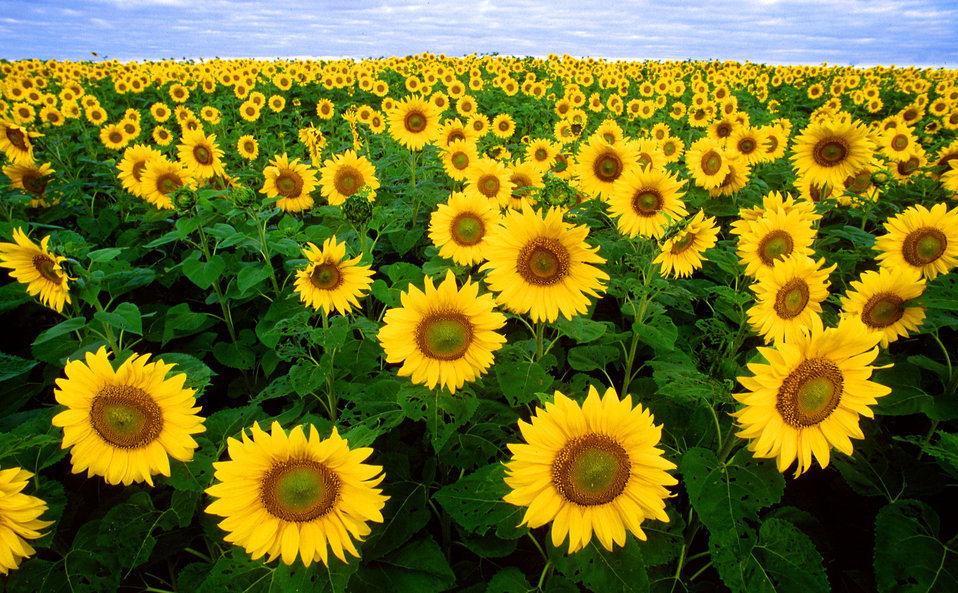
Sunflowers grow in field in Fargo, ND.